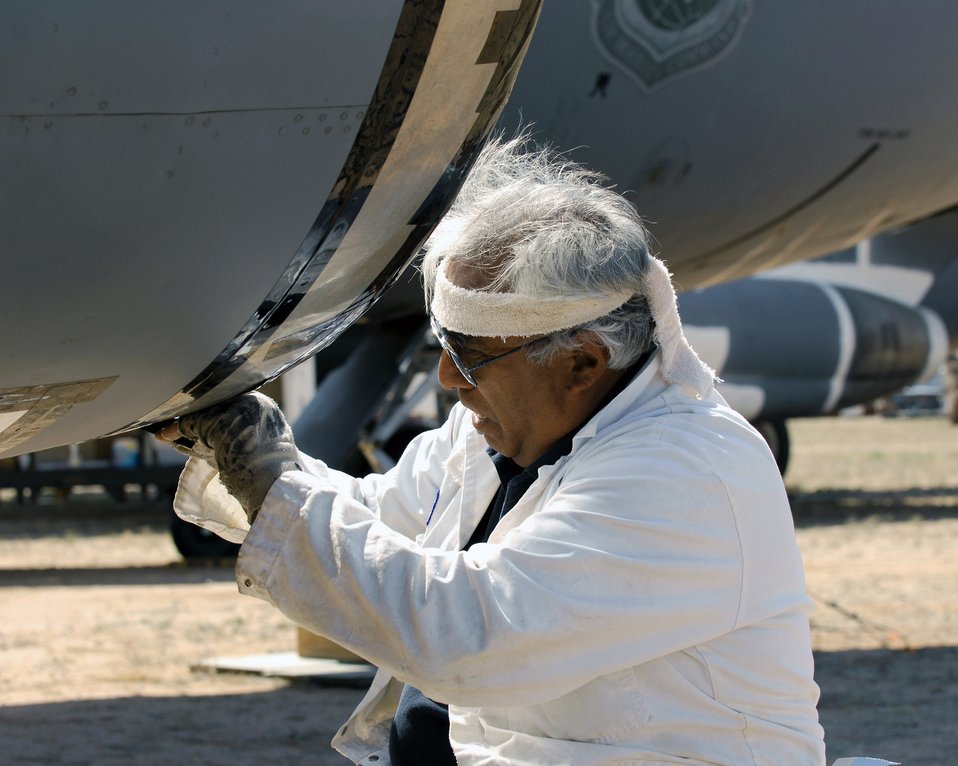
48-year-old KC-135 retires

Manny Vasquez applies black-vinyl tape to a KC-135 E model Stratotanker, tail number 0327, as part of the aircraft's preparation for long term storage April 25 at Davis-Monthan Air Force Base, Ariz. The 48-year-old aircraft was delivered for long term storage at the 2,600 acre facility after serving with the 151st Air Refueling Wing of the Utah Air National Guard for more than 20 years. Mr. Vasquez a technican with the 578th Storage and Disposal Squadron.